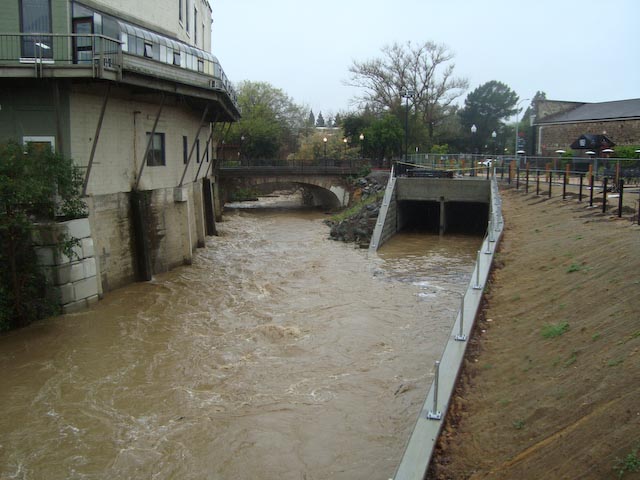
Napa rain storm tests new flood project

Napa Creek’s widened channel and recently completed box culverts (shown at right) were put to use as rain poured in downtown Napa, Calif., March 14, 2012. The culverts - tunnels large enough for a car to drive through - direct flood water out of Napa Creek and reroute it directly to the Napa River, reducing the chance that the creek will spill over into nearby neighborhoods. The work is part of the $14.8 million, American Recovery and Reinvestment Act of 2009-funded Napa Creek Project, a joint effort of the U.S. Army Corps of Engineers Sacramento District, the city of Napa, and the Napa Flood Control and Water Conservation District to reduce the flood risk for the city.